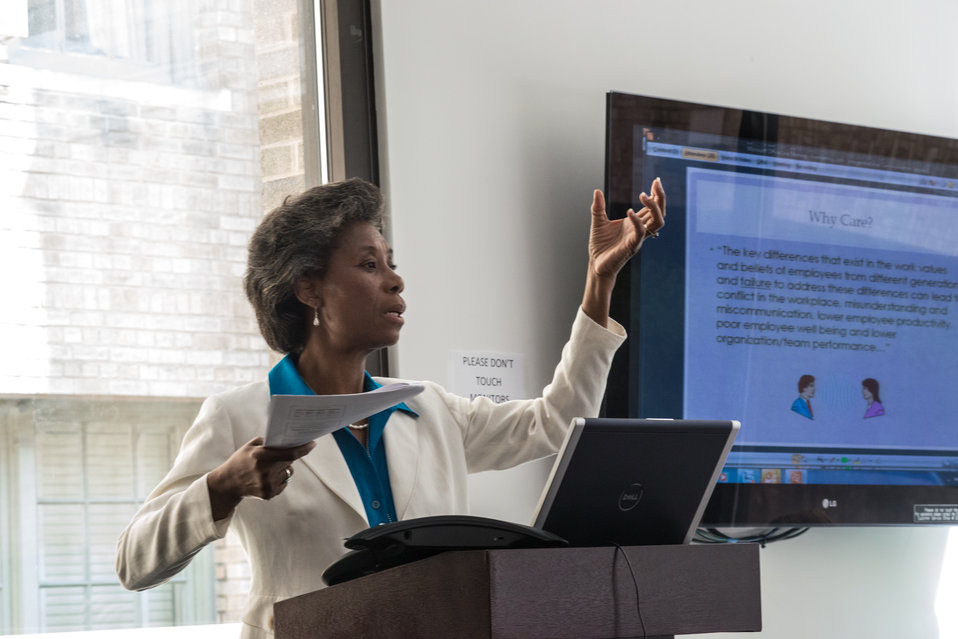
Sage Horizons Consulting Owner Cynthia Gibbs speaks at the U.S. Department of Agriculture’s (USDA) Rural Development (RD) 2nd Annual Cultural Transformation kickoff opening ceremony and forums, themed “Employees Influencing Change,” on Tuesday, Aug. 13, 2013, USDA in Washington, D.C.